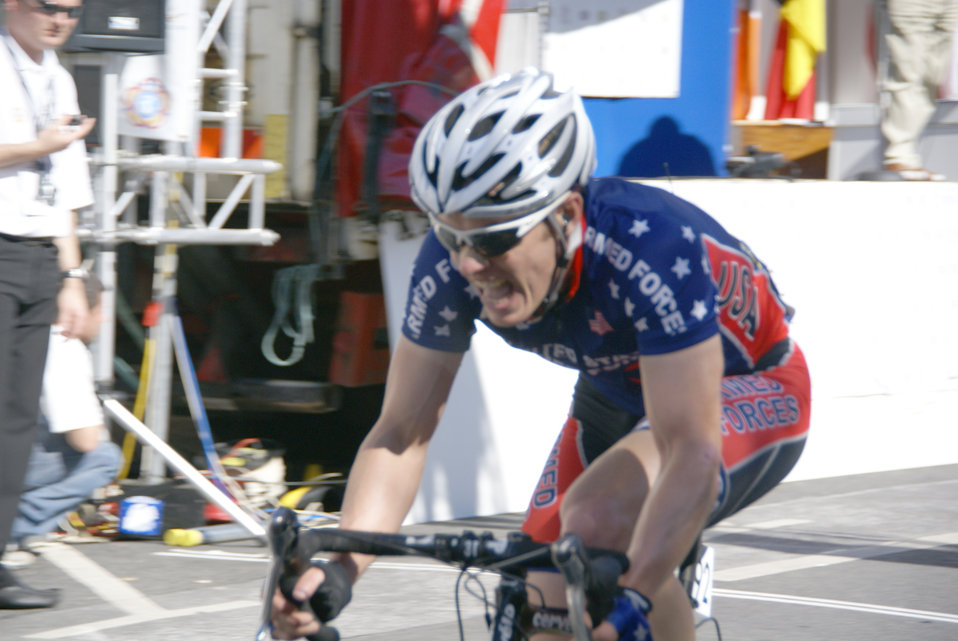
Air Force male athlete of the year

Capt. Ian Holt, a missile crewmember with the 319th Missile Squadron at F.E. Warren Air Force Base, Wyo., races for the United States cycling team at an international competition in Clonmel, Ireland, during the summer of 2009. Captain Holt trained and lived in Europe for one year while training for the event.